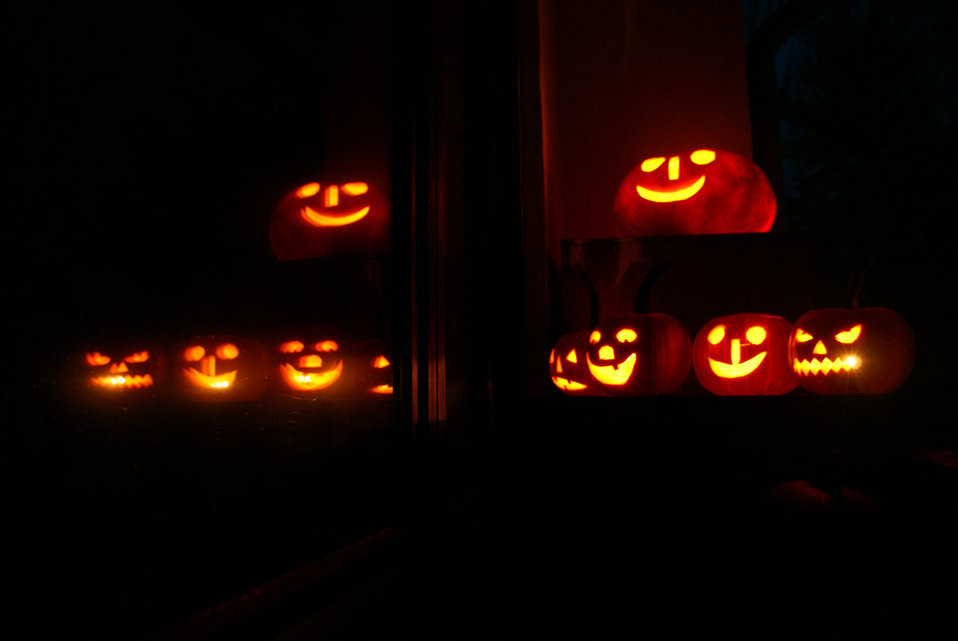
Halloween pumpkins that glow in the dark and are reflected in a window.